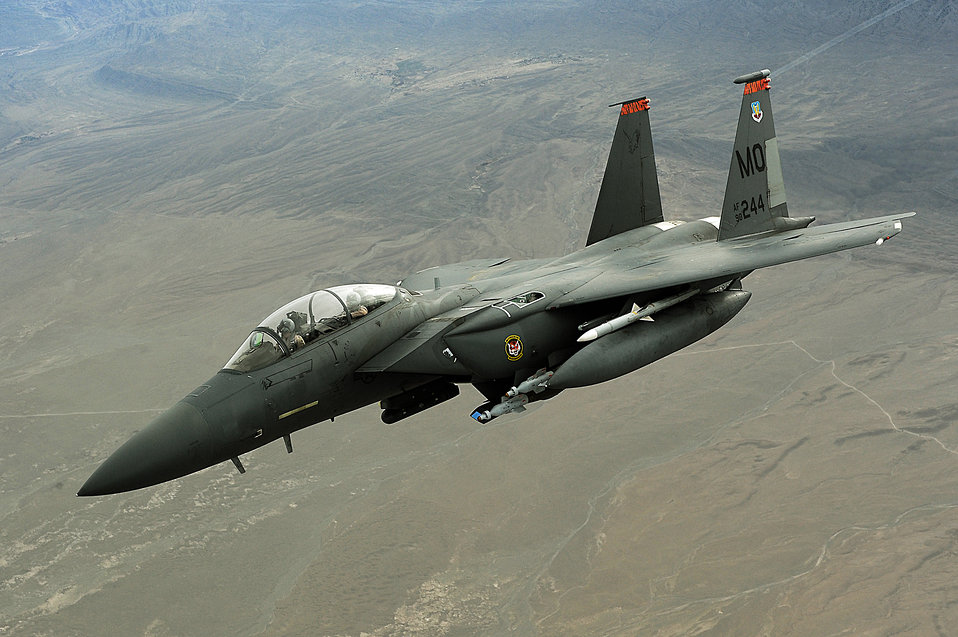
Controlling the sky

An F-15E Strike eagle conducts a mission over Afghanistan on Nov. 7. The F-15E Strike Eagle is a dual-role fighter designed to perform air-to-air and air-to-ground missions. An array of avionics and electronics systems gives the F-15E the capability to fight at low altitude, day or night, and in all weather.